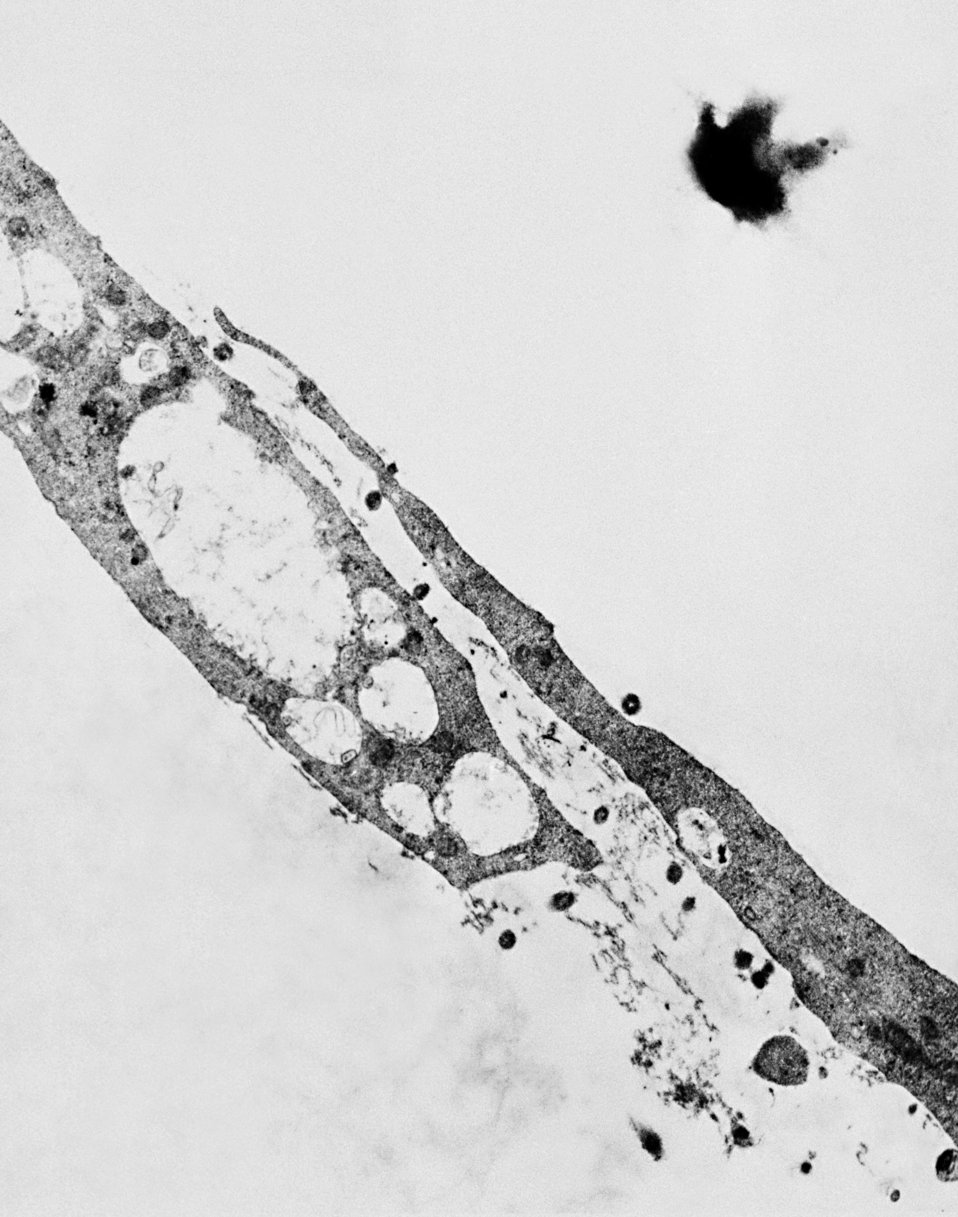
Electron micrograph of Treponema pallidum on cultures of cotton-tail rabbit epithelium cells (Sf1Ep).